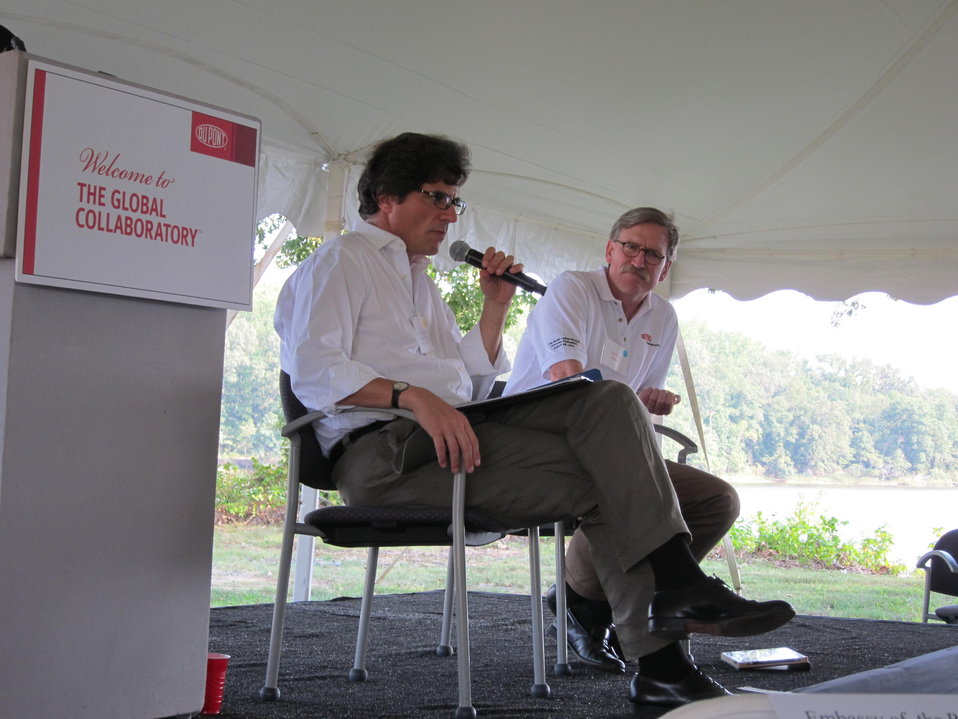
Assistant Secretary Fernandez Delivers Remarks on 'The Role of Biotechnology in Advancing African Agriculture'

Assistant Secretary of State for Economic, Energy and Business Affairs Jose Fernandez delivers remarks on 'The Role of Biotechnology in Advancing African Agriculture,” at Chesapeake Farms in Maryland on September 14, 2011.